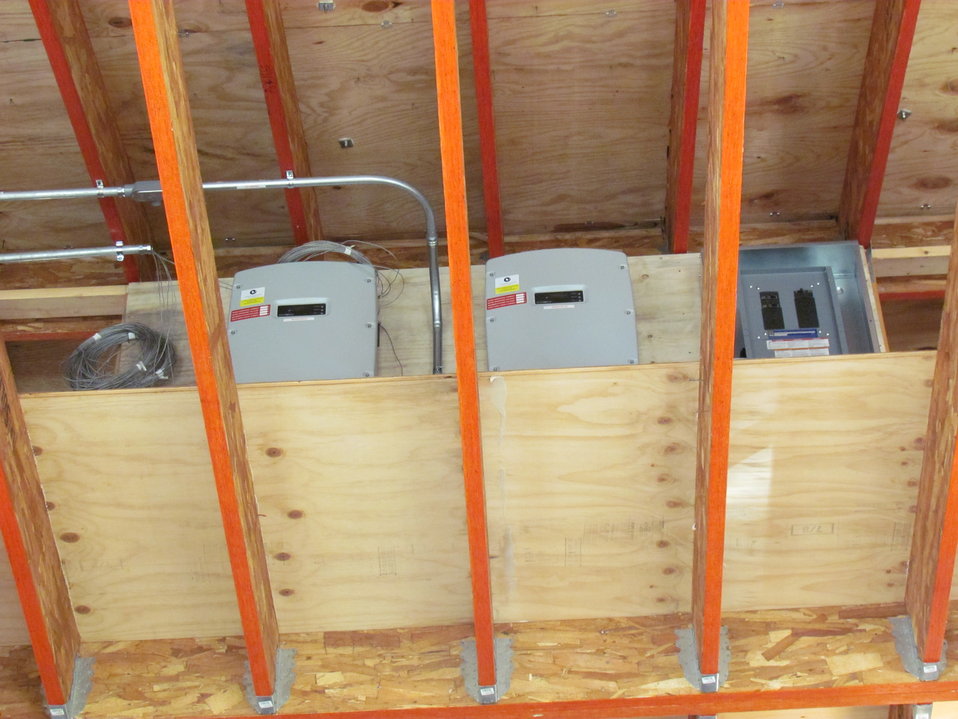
Net-Zero Energy Residential Test Facility – Close-up photo showing one of the many motorized dampers in facility. These computer controlled dampers will be used to adjust the air flow in individual supply ducts to the various conditioned spaces within the home.